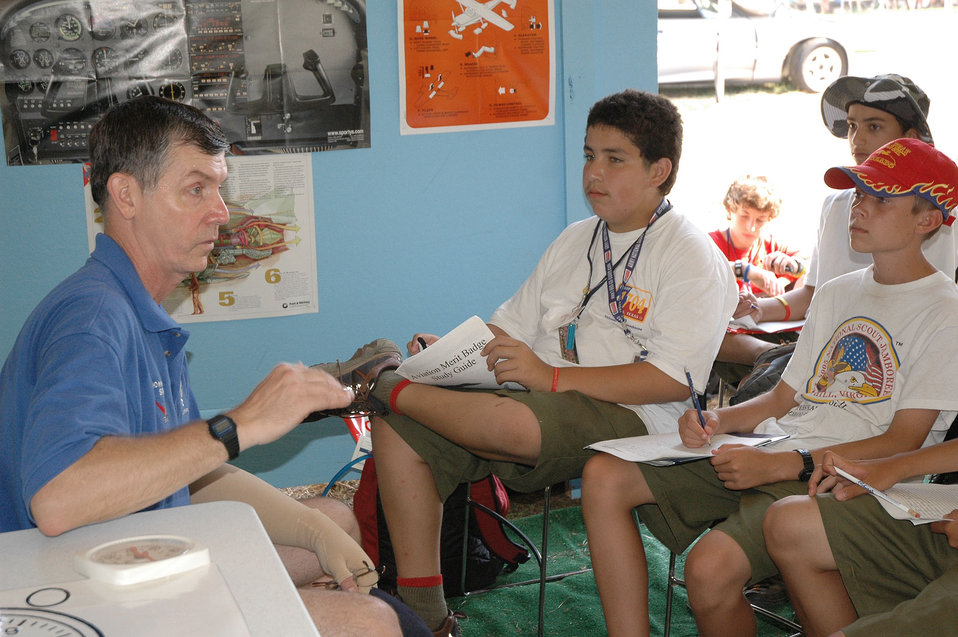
Better than aviation education is a really cool patch

FORT A.P. HILL, Va. -- Retired Lt. Col. Tom Sawner helps Boy Scouts earn an aviation merit badge at the 2005 National Scout Jamboree by helping them understand the job of certified flight instructors. Retired and active-duty Air Force pilots, civilian pilots, certified flight instructors and even a Navy pilot helped nearly 1,000 Boy Scouts earn their aviation merit badge during the 10-day Jamboree.